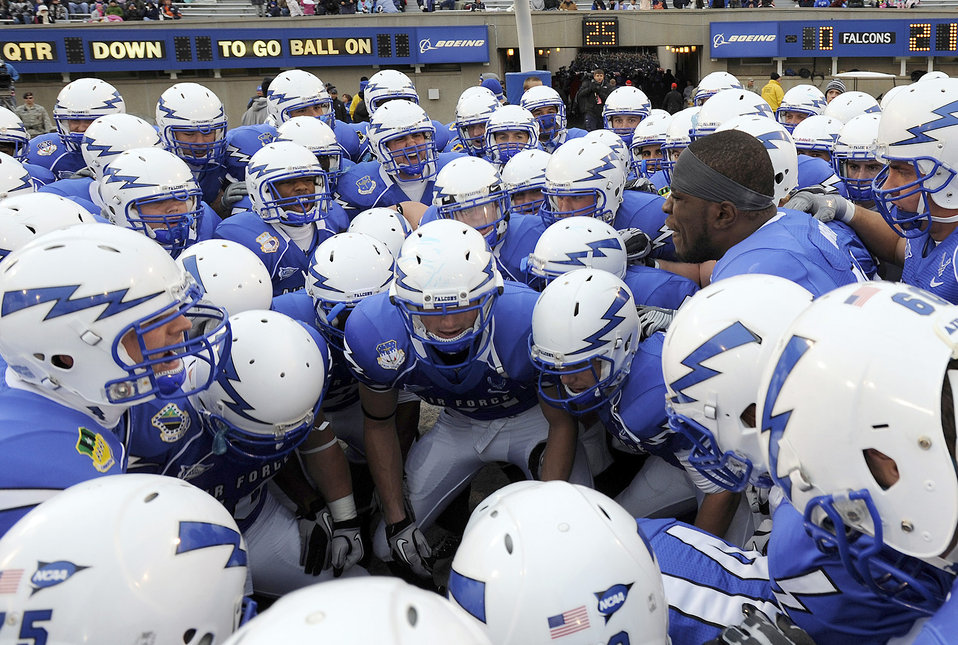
Falcons to Play Independence Bowl

Senior defensive back Reggie Rembert leads the Air Force Falcons in a huddle before the start of the last home game of the season against New Mexico Nov. 13, 2010, at Falcon Stadium in Colorado Springs, Colo. The Falcons will play Georgia Tech in the 2010 AdvoCare V100 Independence Bowl Dec. 27.